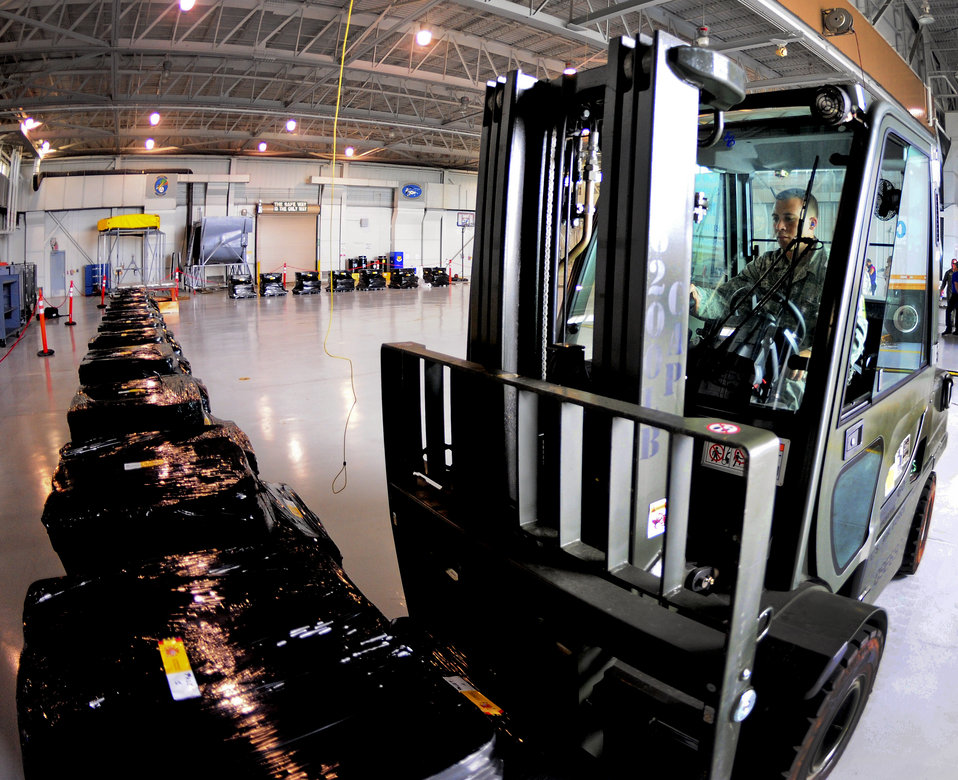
MacDill helps reunite Spanish government, lost gold

Staff Sgt. Benjamin Woods, the 6th Logistics Readiness Squadron air freight supervisor, places a pallet of Spanish coins in a line at MacDill Air Force Base, Fla., Feb. 23, 2012. The coins, which were lost at sea in the 19th century, are being palletized in preparation for their long awaited return back to Spain.